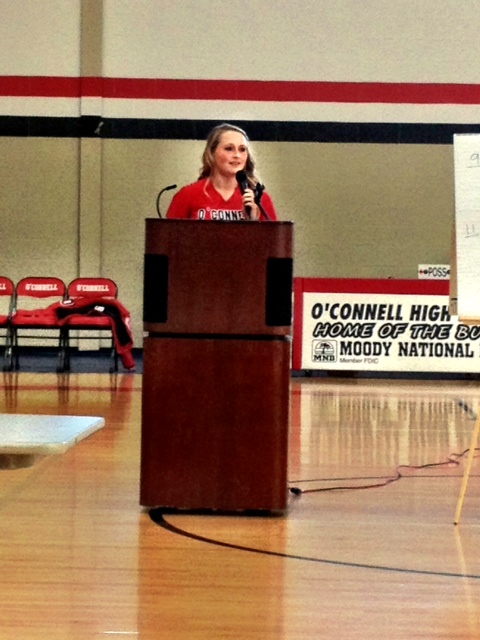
Bay Area Council on Drugs and Alcohol, Galveston, TX

Emily Low, a senior at O'Connell H.S., Galveston, TX. Emily adopted NDFW 2013 as her senior project and has coordinated a pep rally against drugs and a poster contest.